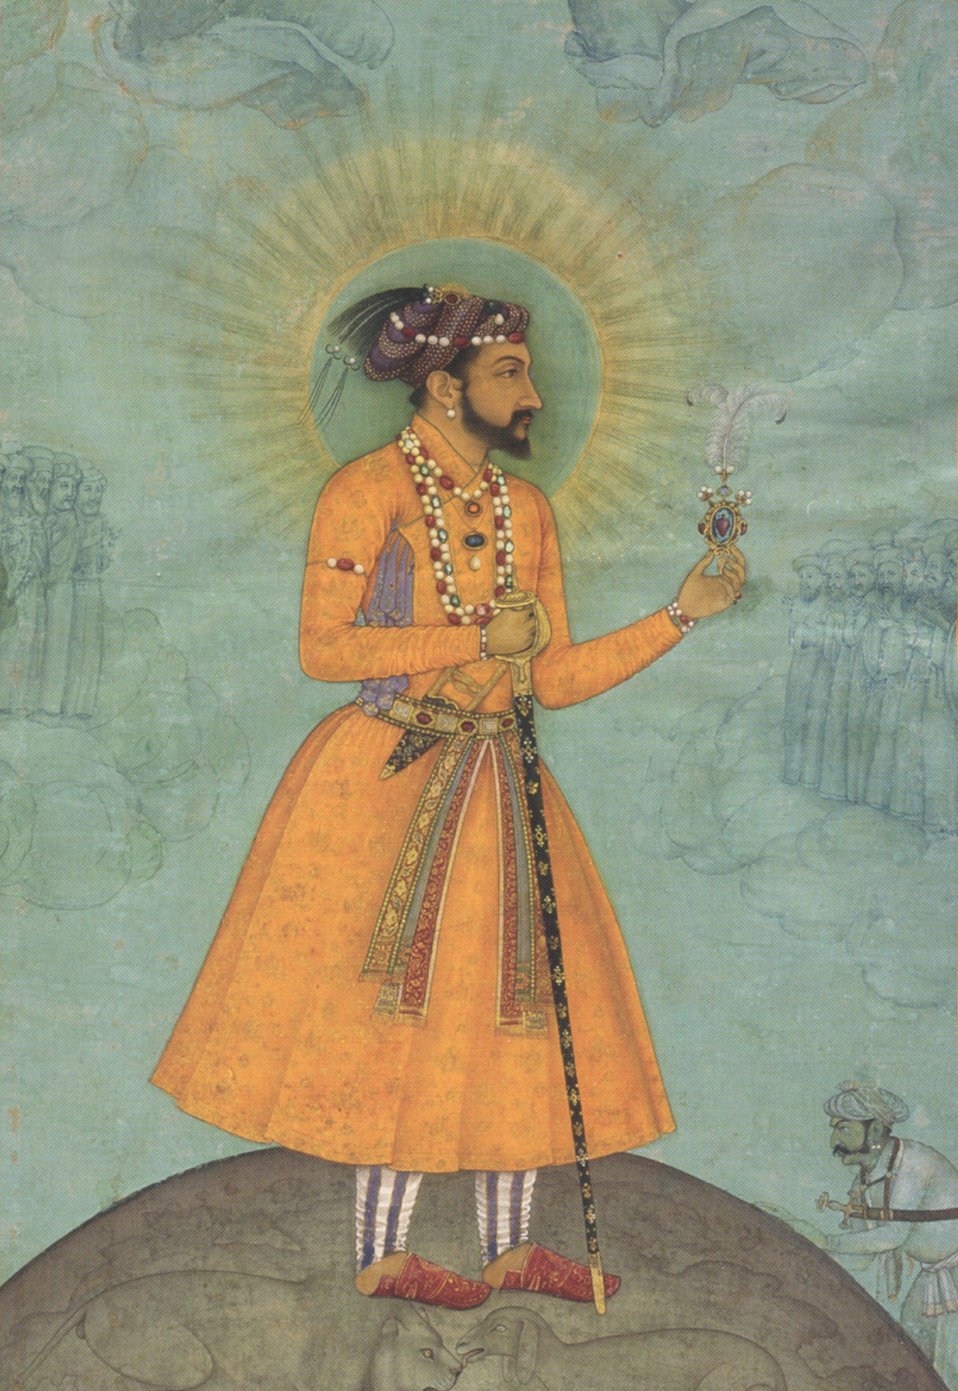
Jujhar Singh Bundela Kneels in Submission to Shah Jahan, signed Bichitr, c. 1630, Chester Beatty Library